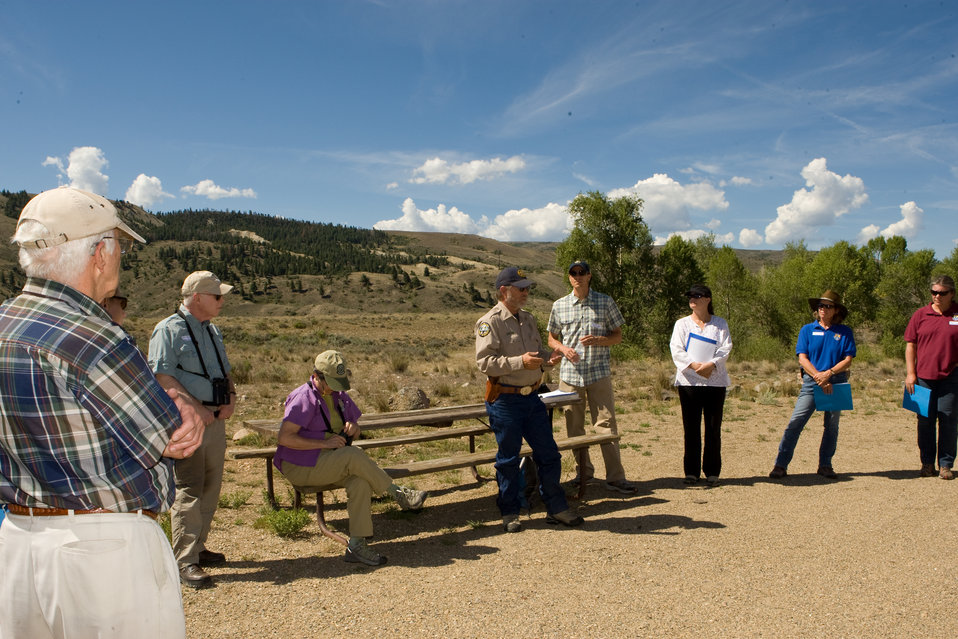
Colorado Rare Plant Conservation Initiative

The Colorado Rare Plant Conservation Initiative (RPCI) is a partnership of 23 statewide and regional agencies, private organizations, and academic institutions working to conserve 121 rare plants in Colorado. As part of these efforts the group developed the Colorado Rare Plant Conservation Strategy, developed Best Management Practices to reduce energy development impacts, addressed climate change, and developed focused strategies for the conservation of individual species at eight priority landscapes. The group has also worked to coordinate volunteer efforts for plant conservation across the state.